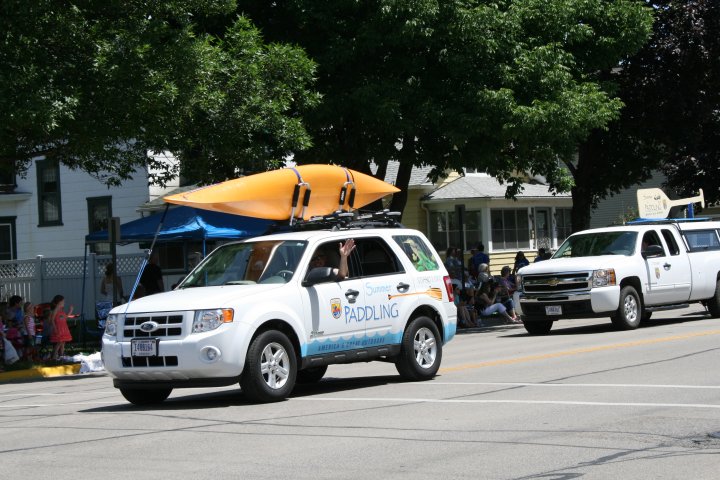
SOP vehicle

WRS Curt McMurl waves to the crowd from the official Summer of Paddling vehicle during the Steamboat Days Parade held in Winona, MN.